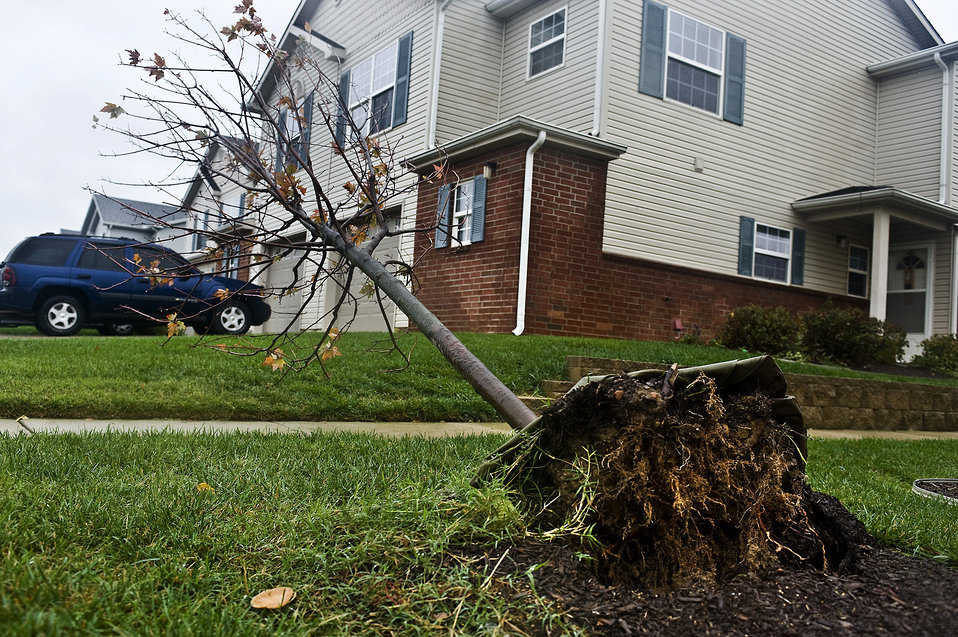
Uprooted

A tree was uprooted on Dover Air Force Base, Del., as a result of the high wind and heavy rainfall from Hurricane Sandy Oct. 30, 2012.